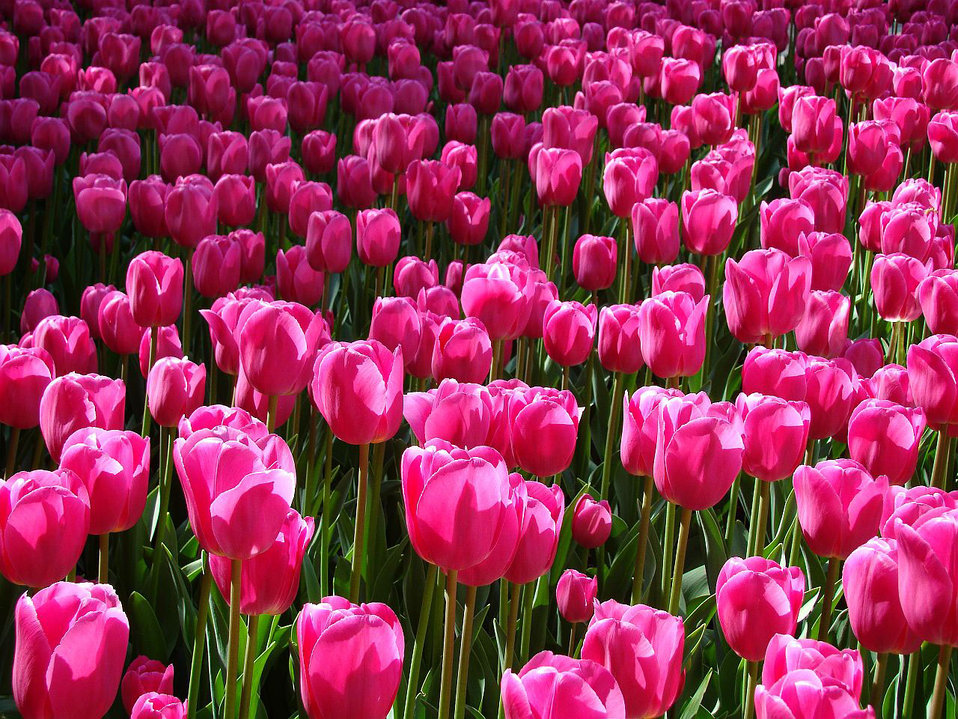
Pink tulips

Tulips everywhere.